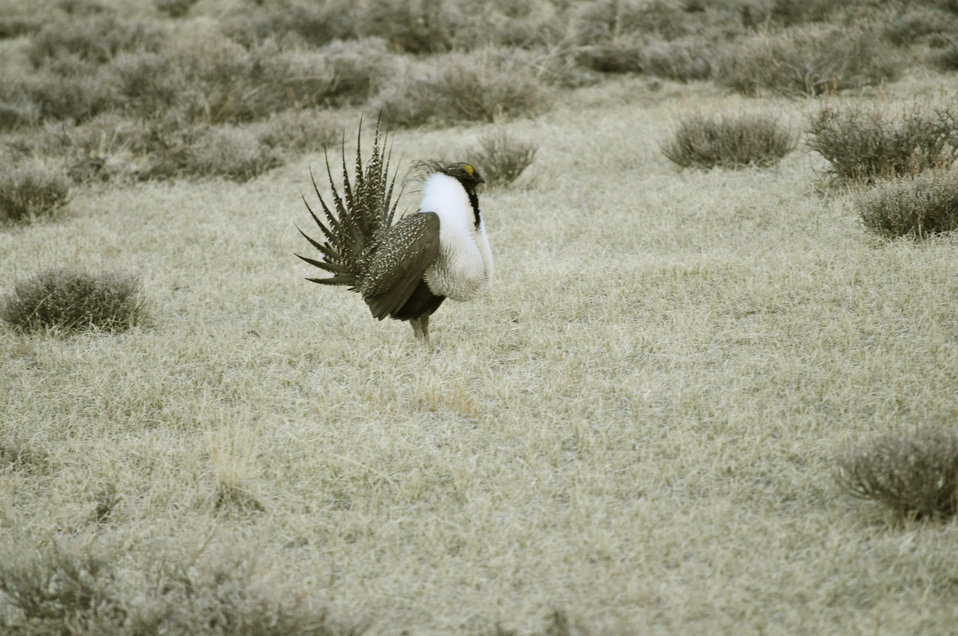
Male greater sage-grouse struts at lek (dancing or mating grounds) to attract females near Bodie, California.